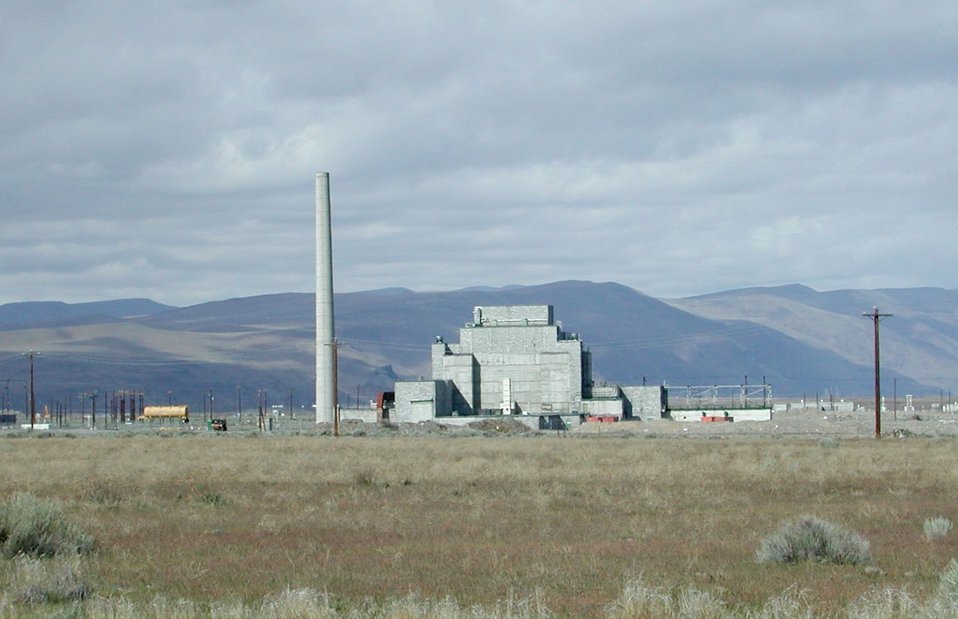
View of the B-Reactor at the Hanford Site. The site is the world's first industrial-scale nuclear reactor as a national historical landmark.